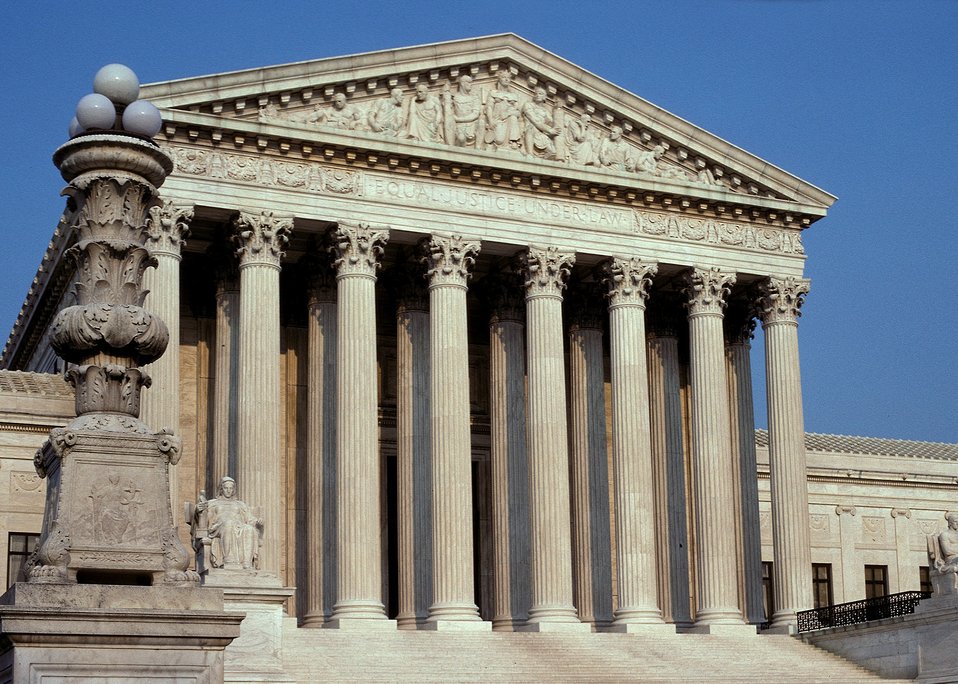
U. S. Supreme Court Building in Washinton DC.